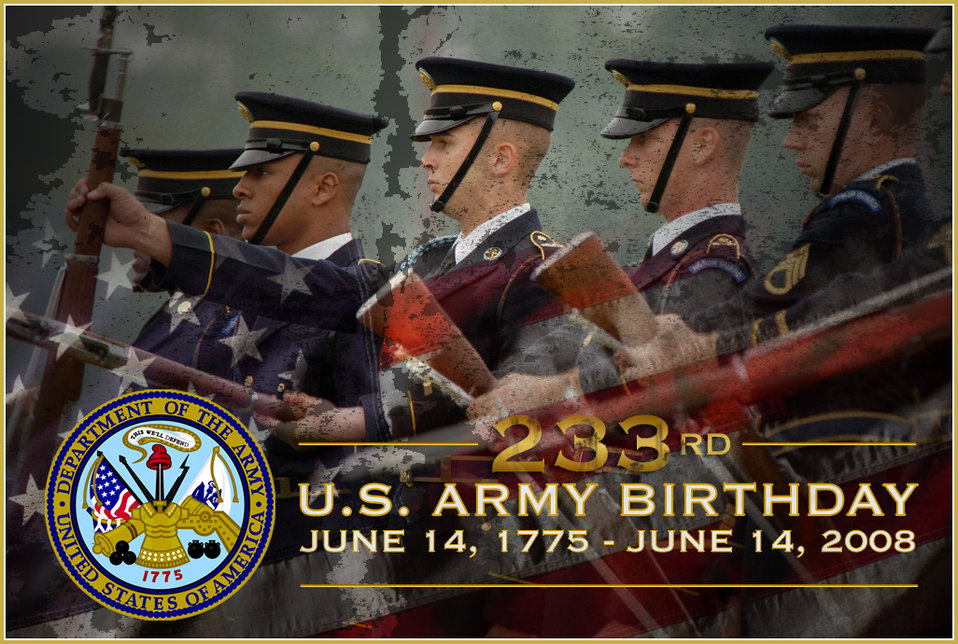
U.S. Army celebrates 233nd birthday

Since its birth on June 14, 1775, more than a year before the Declaration of Independence was signed, the U.S. Army has played a vital role in the growth and development of America. Soldiers have fought more than 10 wars, from the American Revolution through the Cold War, the Gulf War, to the current war on terrorism. This 233nd birthday is a recognition of the Army's history, traditions and service to the nation, a call to duty, 233 years of service to the nation.